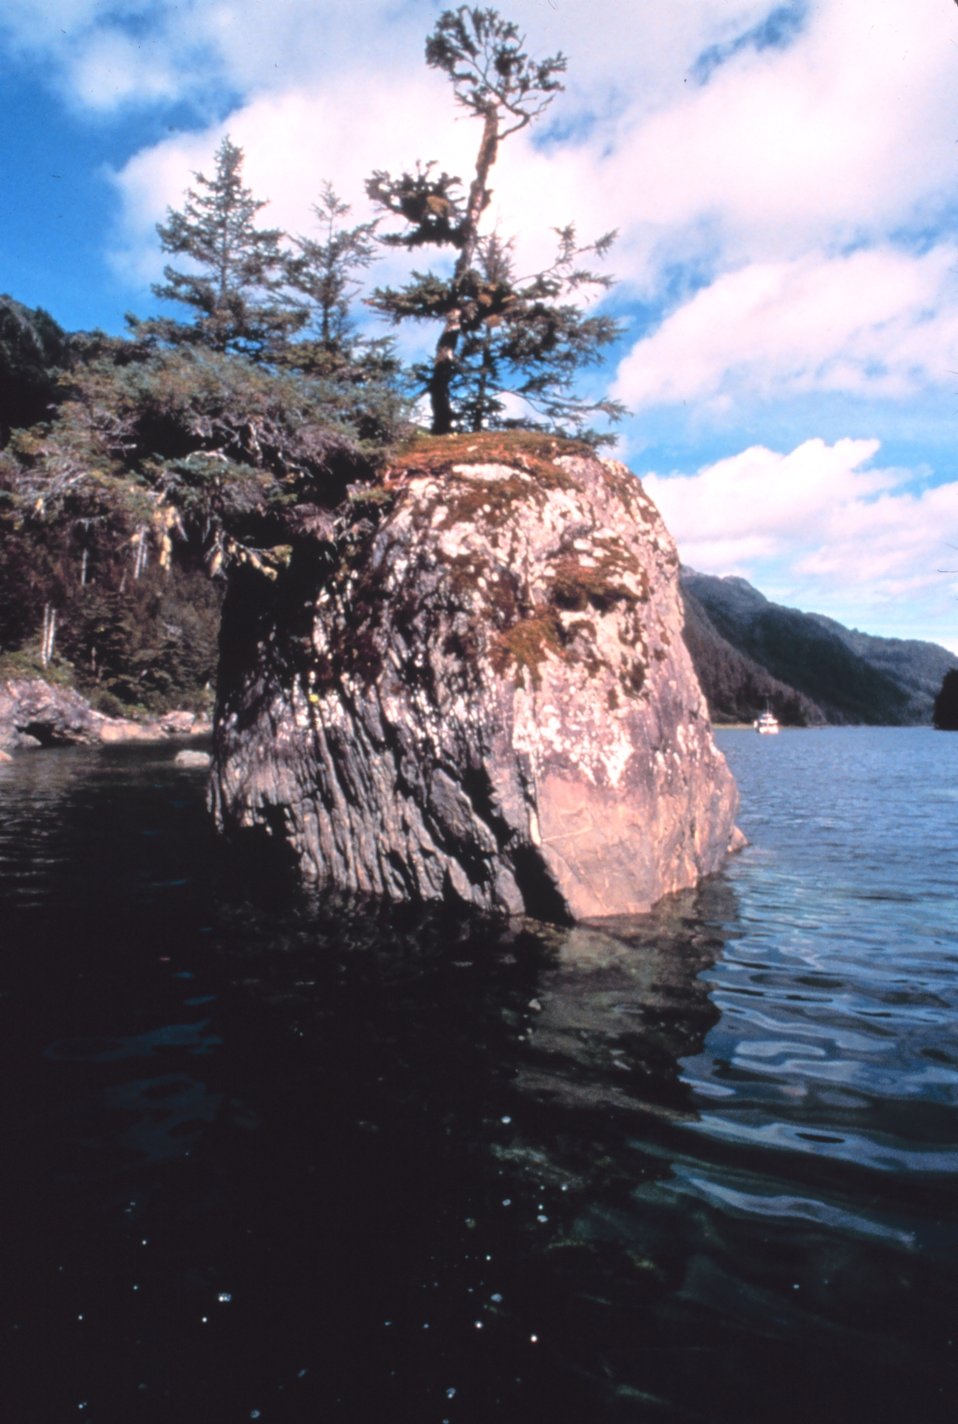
Stunted trees and bushes growing from offshore rock reminiscent of bonsai garden